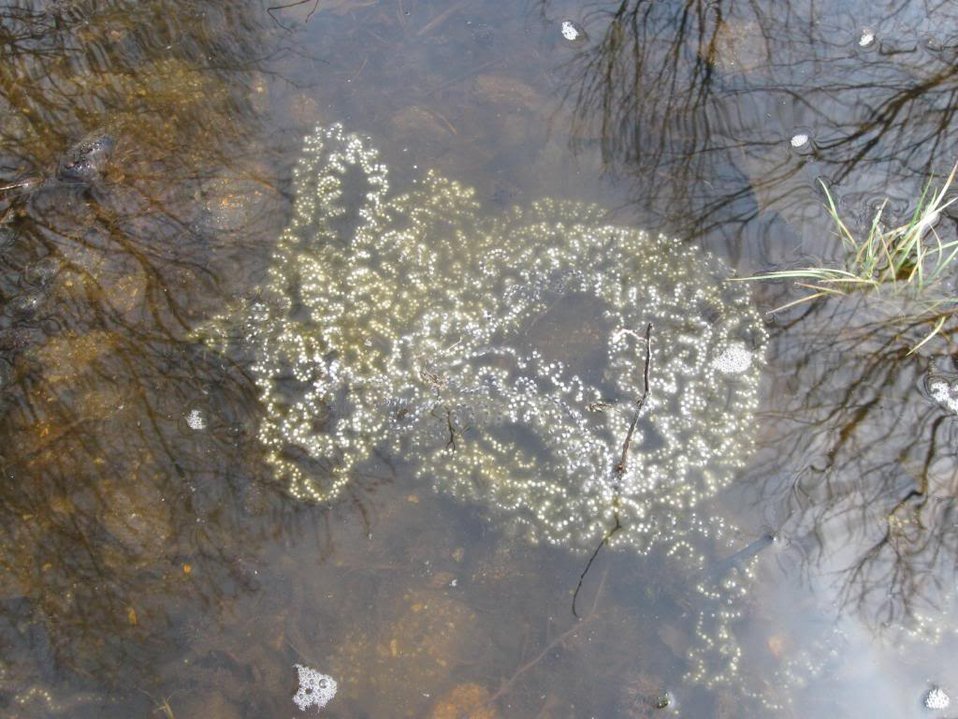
American toad egg mass at Assabet River National Wildlife Refuge.

Credit: Zachary Cava/USFWS

Assabet River National Wildlife Refuge is part of the Eastern Massachusetts National Wildlife Refuge Complex.